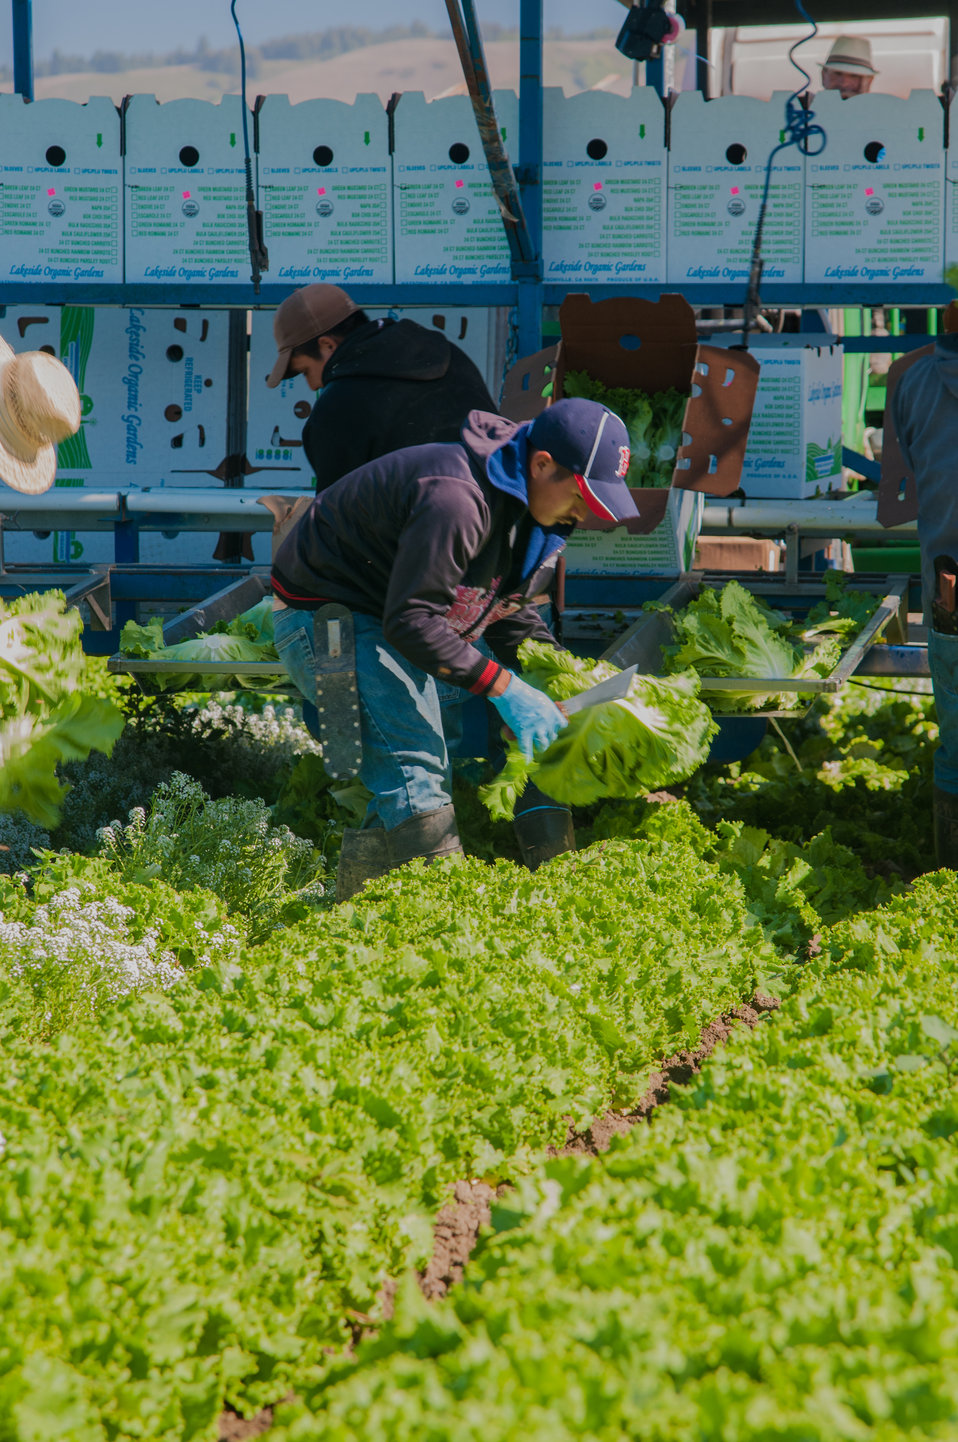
Migrant workers harvest Lettuce at Lakeside Organic Gardens in Watsonville, CA on Tuesday, Aug. 27, 2013.